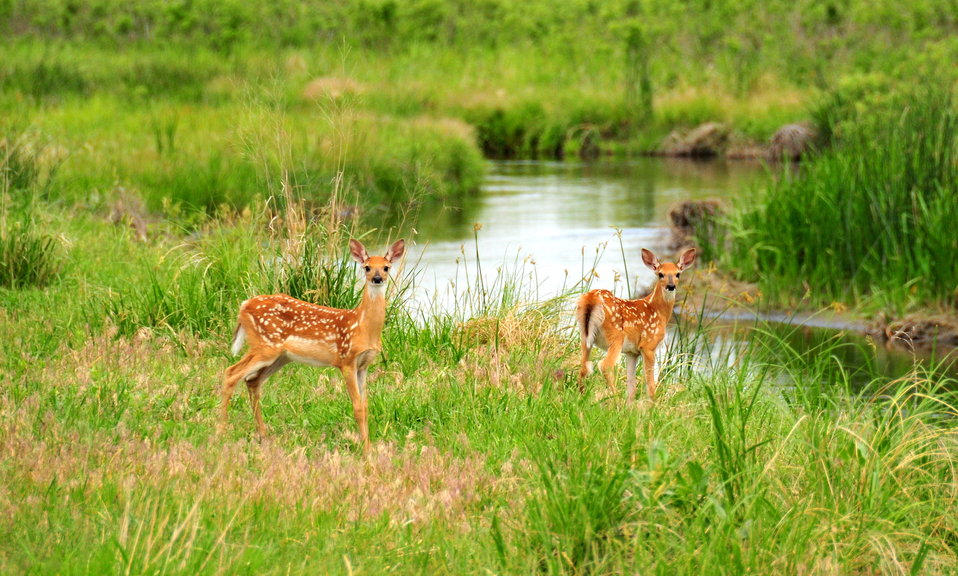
White tailed deer fawns Lacreek NWR 01

Twin white tailed deer fawns on Lacreek NWR.